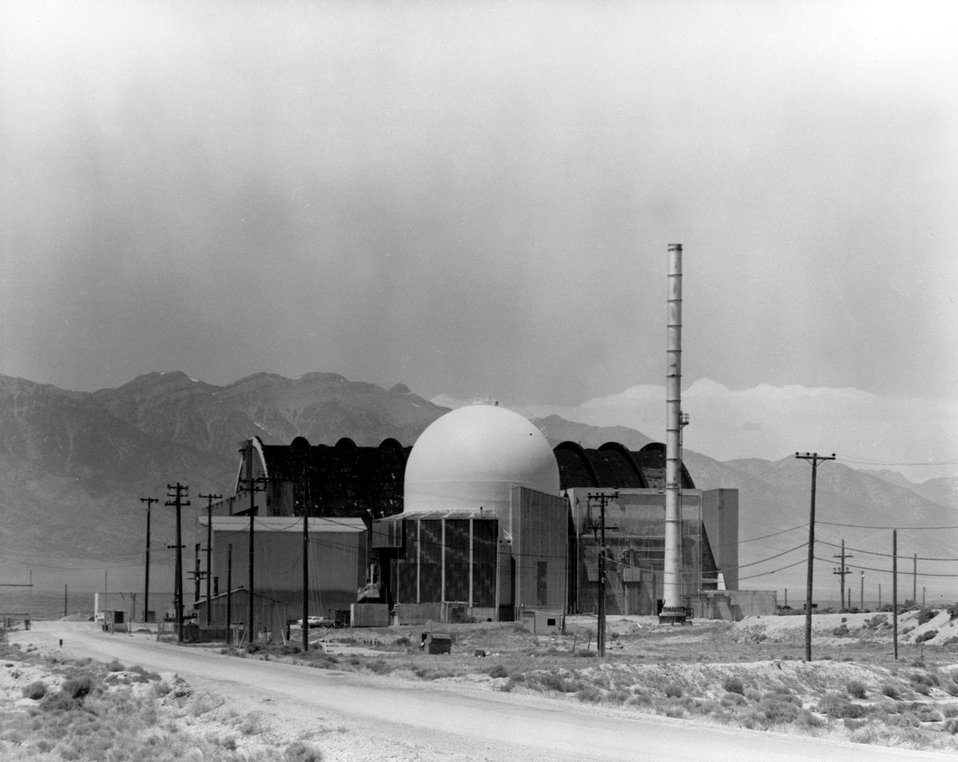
A view of the Loss of Fluid Test Facility at the Energy Research and Development Administration's Idaho National Engineering Laboratory. Circa 1975.